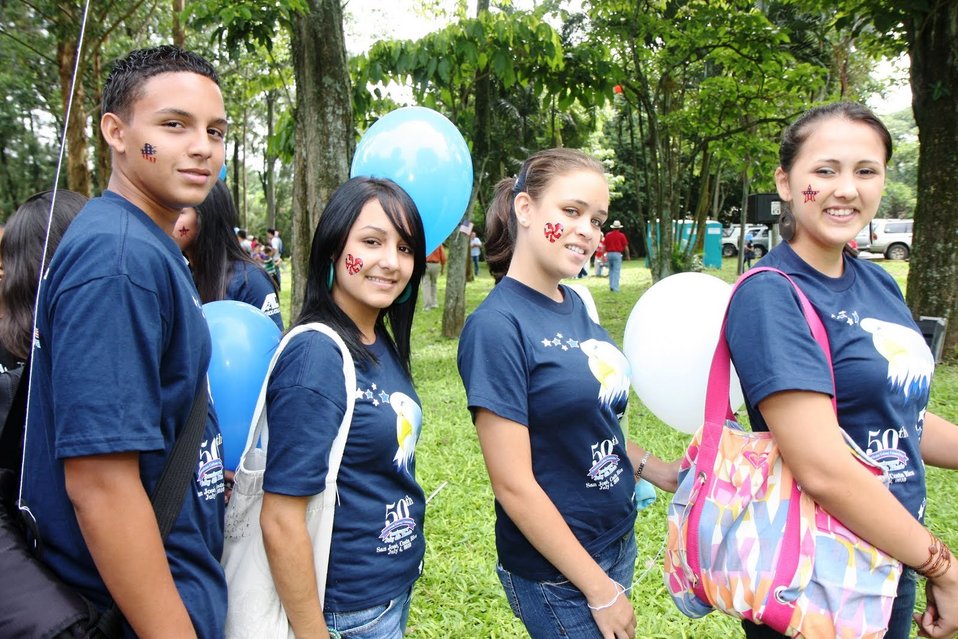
Students Show Off Their Face Paintings

Students from U.S. Embassy San Jose in Costa Rica's English Access Microscholarship Program show off their face paint during the U.S. Independence Day celebration on July 2, 2010, in San Jose, Costa Rica.